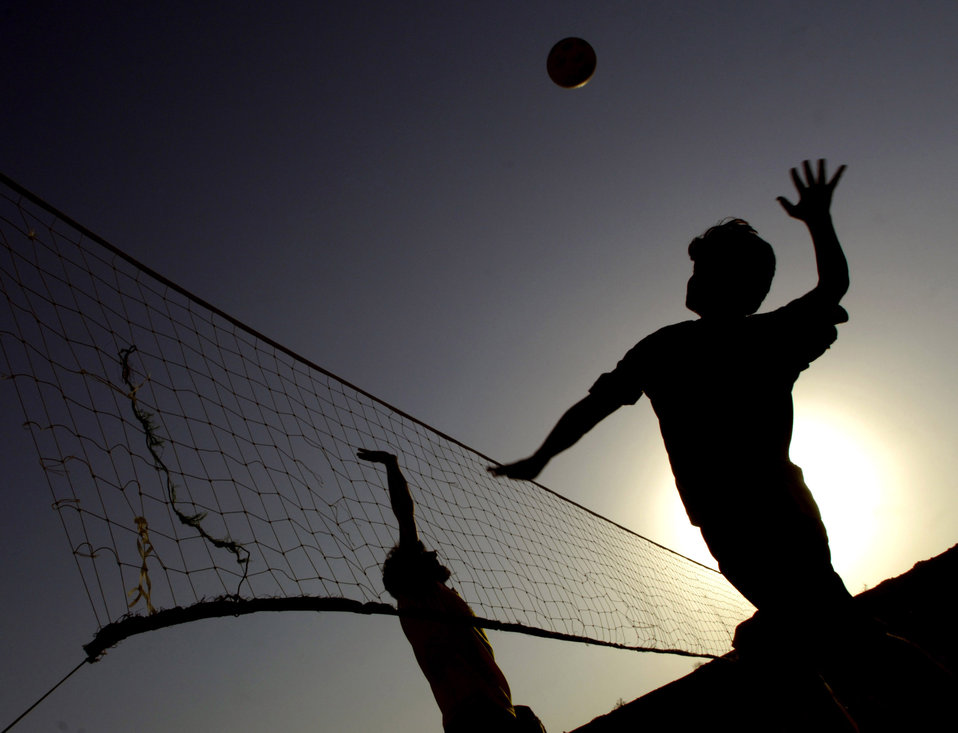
Volleyball unites Afghans, Americans

Airmen and Soldiers from the Provincial Reconstruction Team host a volleyball game Aug. 26 for Afghan high school students invited from the province's five districts Aug. 26 at Forward Operating Base Mehtar Lam, located in Afghanistan's Laghman Province. The weekly volleyball games are designed to give the students a chance to meet and interact with military members in a friendly atmosphere.